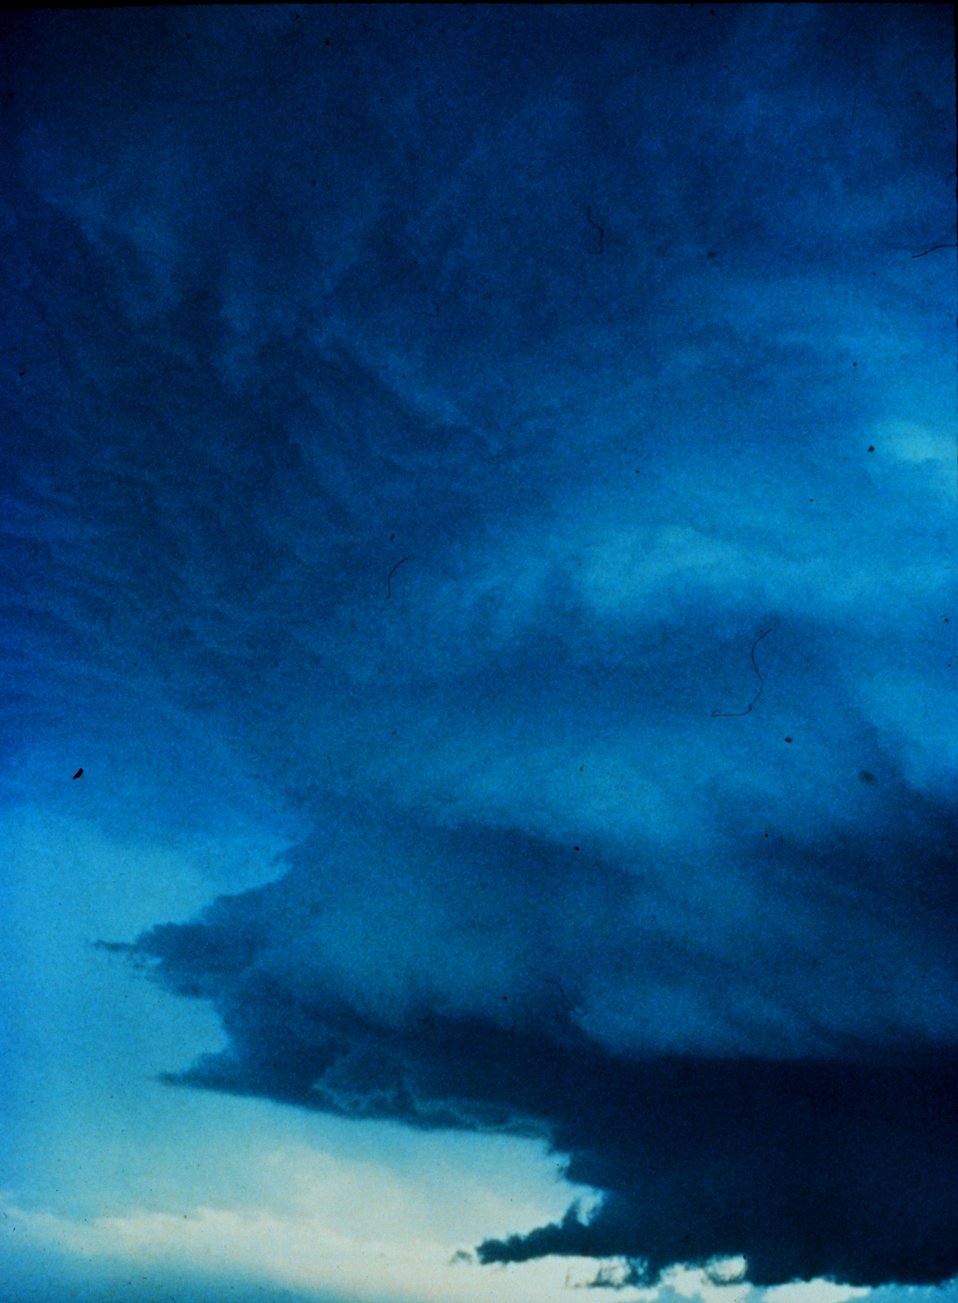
Cumulonimbus - squall line associated with cold front.